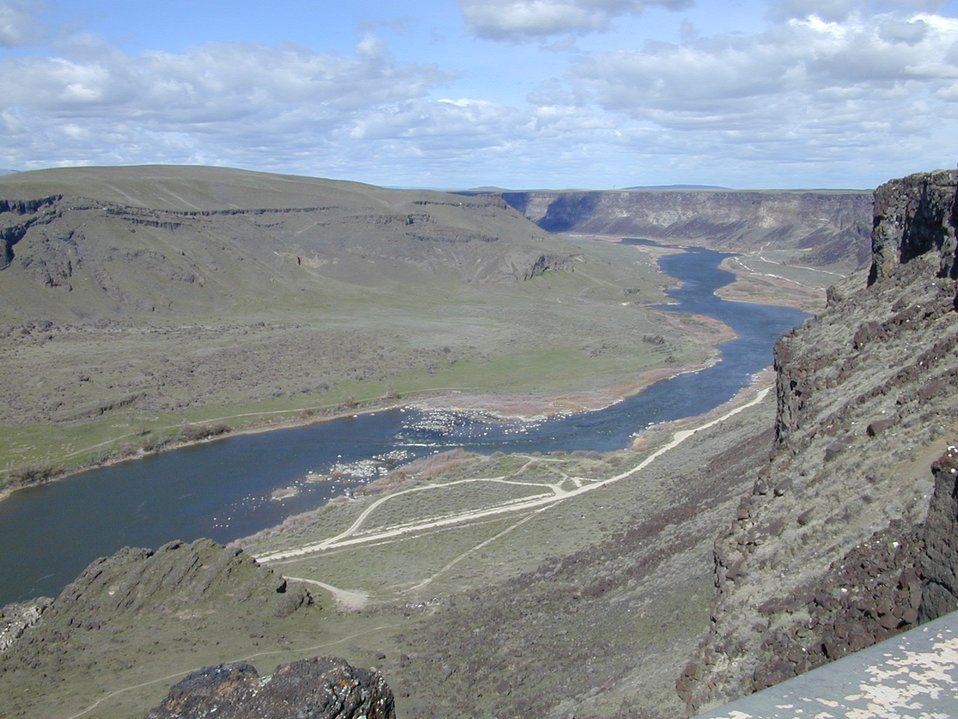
Snake River Birds of Prey National Conservation Area Lower Snake River District LSRD Snake River Canyon Scenic